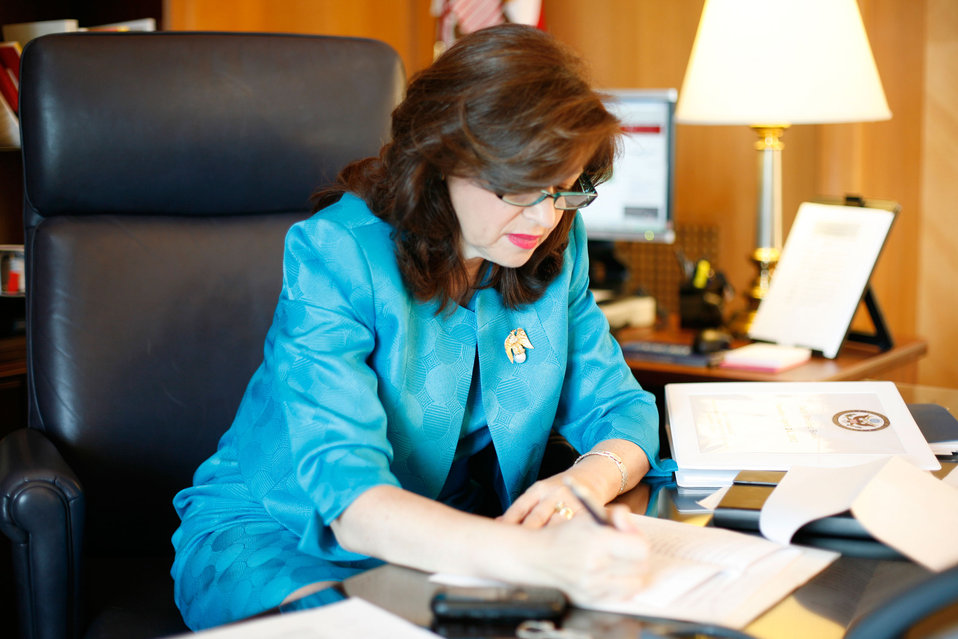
Under Secretary Sonenshine Prepares for her Swearing-In Ceremony

Under Secretary of State for Public Diplomacy and Public Affairs Tara Sonenshine prepares for her swearing-in ceremony with Secretary of State Hillary Rodham Clinton at the U.S. Department of State in Washington, D.C., on April 24, 2012.